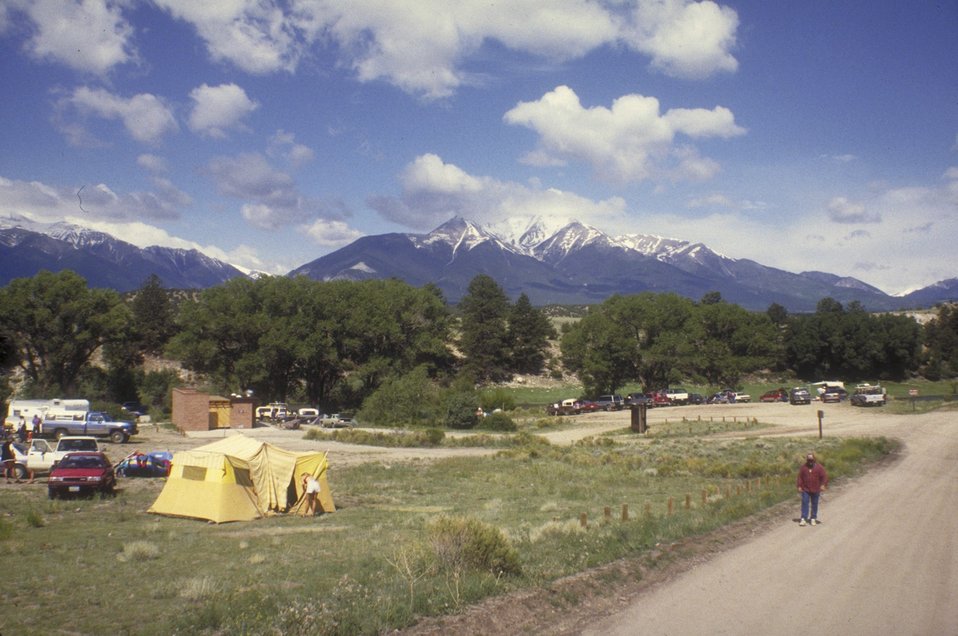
Camping near the Arkansas River.